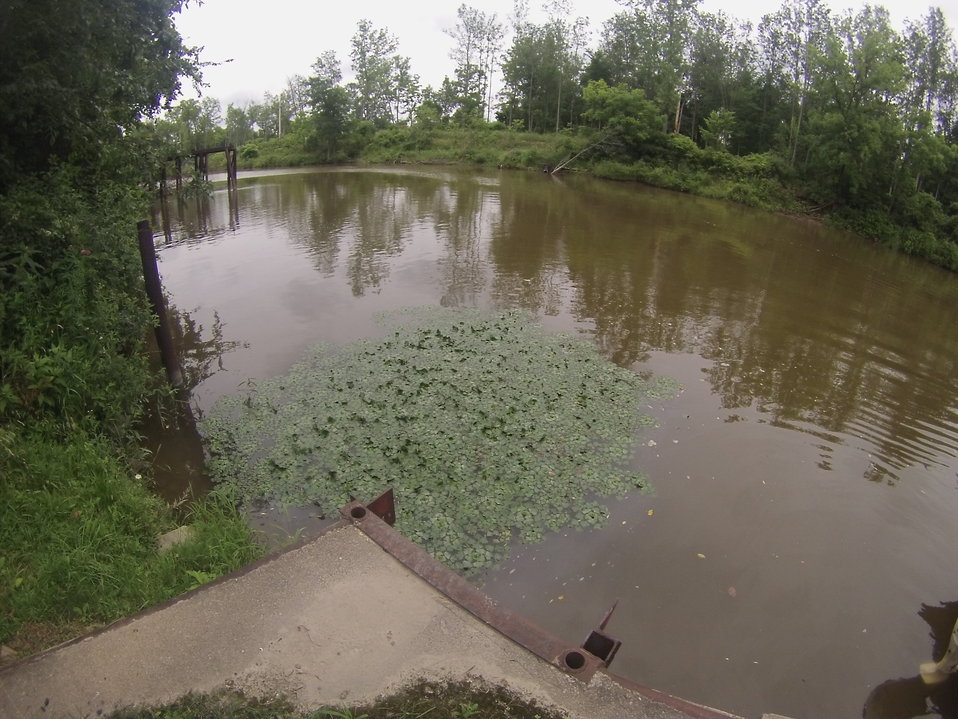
Invasive Waterchestnut

A small mat of invasive Waterchestnut was found late last week during an Erie Canal survey.